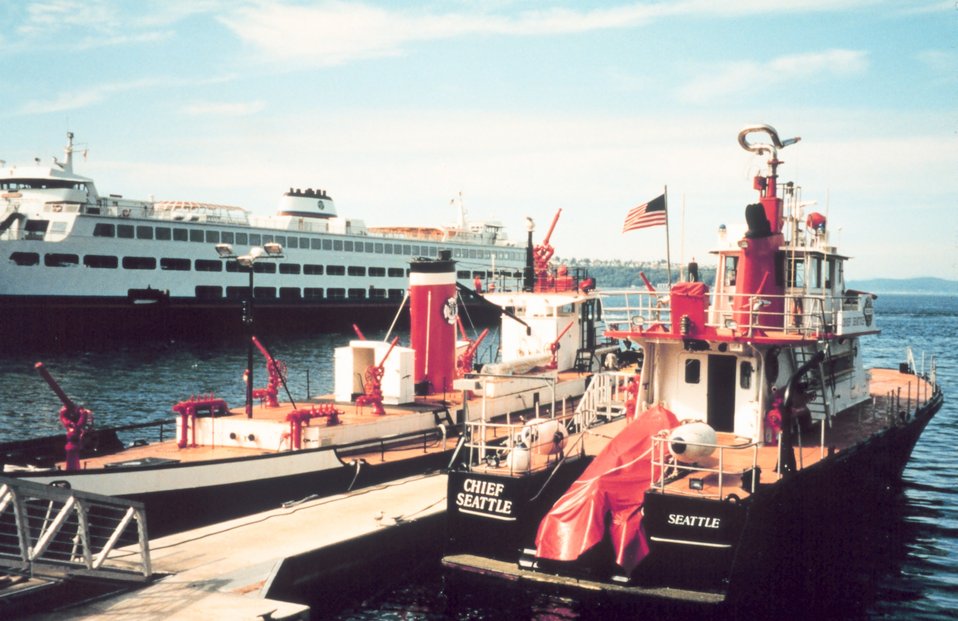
The fireboat Chief Seattle on the Seattle waterfront